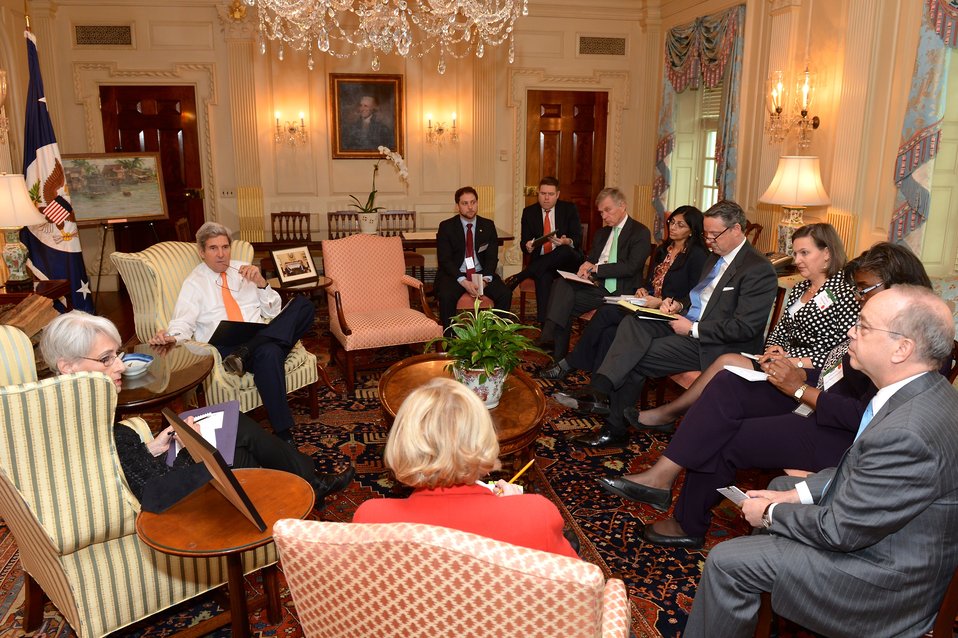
Secretary Kerry Meets With His Top Leadership

U.S. Secretary of State John Kerry meets with members of his leadership team at the U.S. Department of State in Washington, D.C., on March 10, 2014.